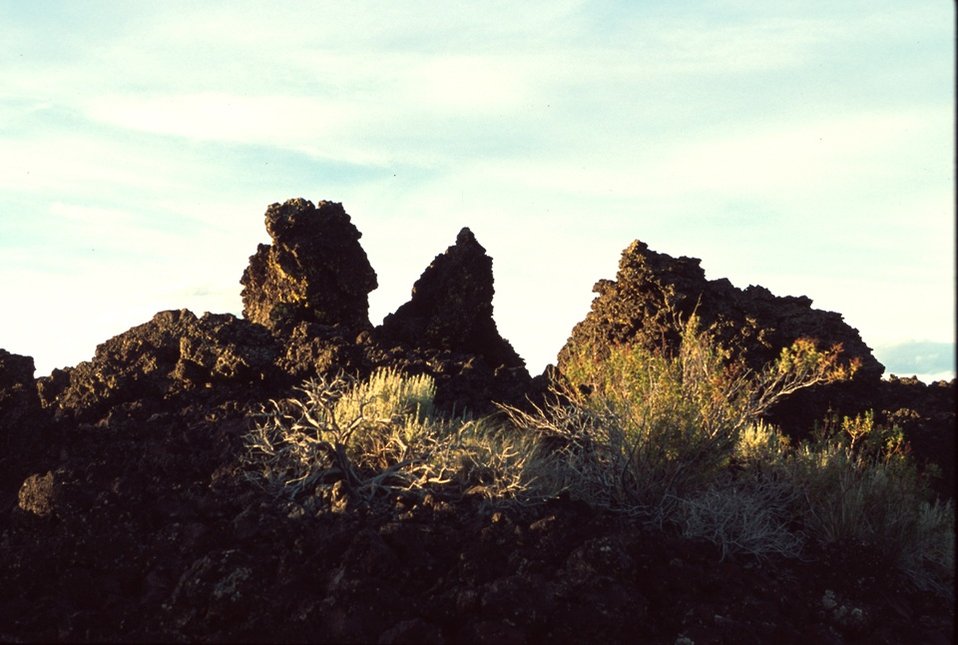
Craters of the Moon National Monument Shoshone Field Office USRD Upper Snake River District